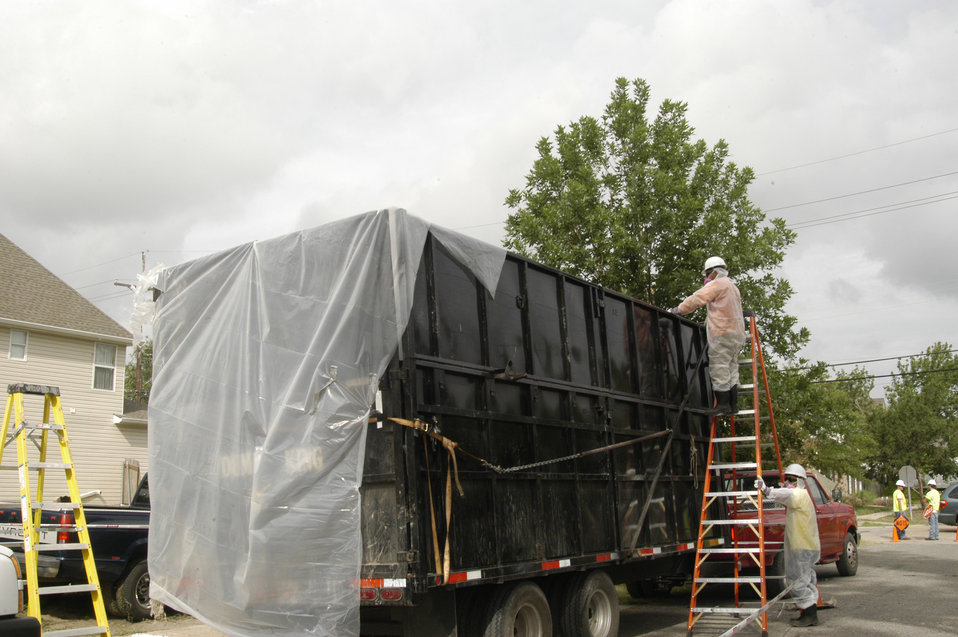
Many of the older homes and buildings in the New Orleans, LA, locale that were destroyed by Hurricane Katrina contained asbestos material (i.e. asbestos roofing tiles, transite siding, insulation, floor tiles, and popcorn ceilings). The U.S. Army Corps of Engineers (USACE) was mandated to follow strict environmental protocols in the demolition of these homes that were designated Regulated Asbestos Containing Material (RACM) demolitions. Personnel working inside the “hot zone” wore special suits with a respirator to prevent ingestion of asbestos particulates that might become airborne during the demolition project. All workers inside the “hot zone” wore protective clothing and respirators including those responsible for securing the contaminated material inside trucks that were lined with thick plastic and sealed before the trucks could leave the area.